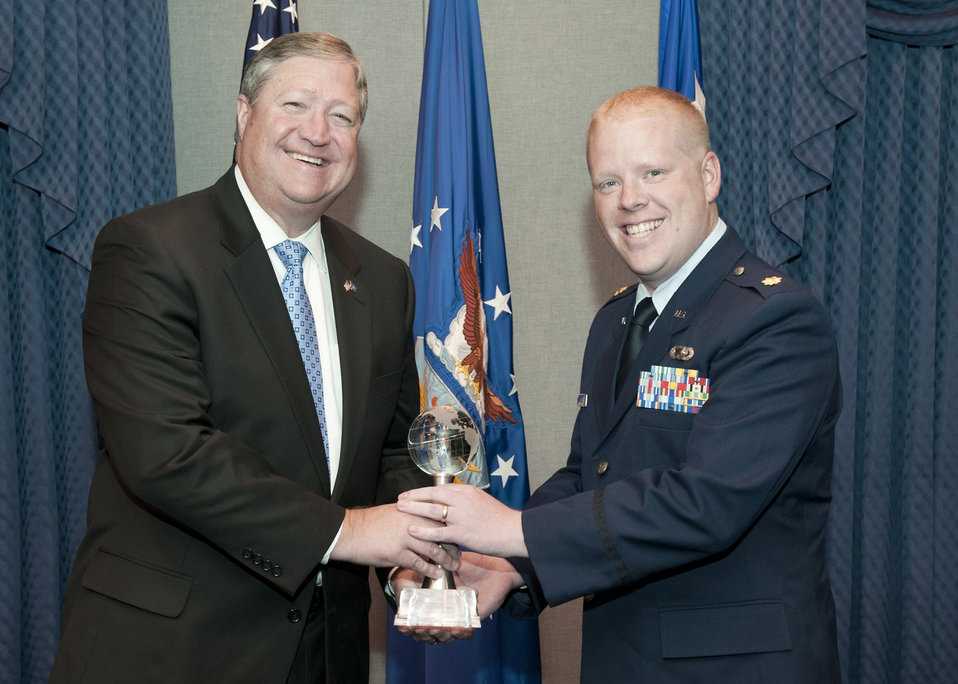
International Affairs Excellence Award

Secretary of the Air Force Michael Donley presents Maj. Paul Sebold with the Air Force International Affairs Excellence Award for 2010 during a ceremony May 31, 2011, in the Pentagon. Established in 2008, the annual award recognizes the Air Force member who is judged to most effectively build, sustain, expand and guide enduring international relationships. Major Sebold is assigned to Headquarters U.S. Air Forces in Europe at Ramstein Air Base, Germany, as a political military affairs strategist and country desk officer.